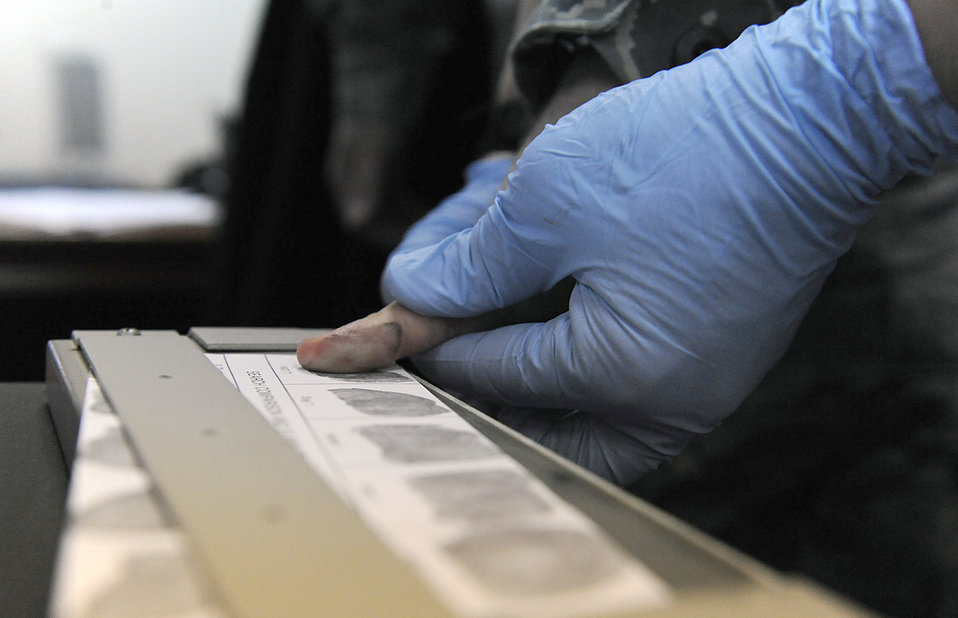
Practice keeps investigative skills sharp

A